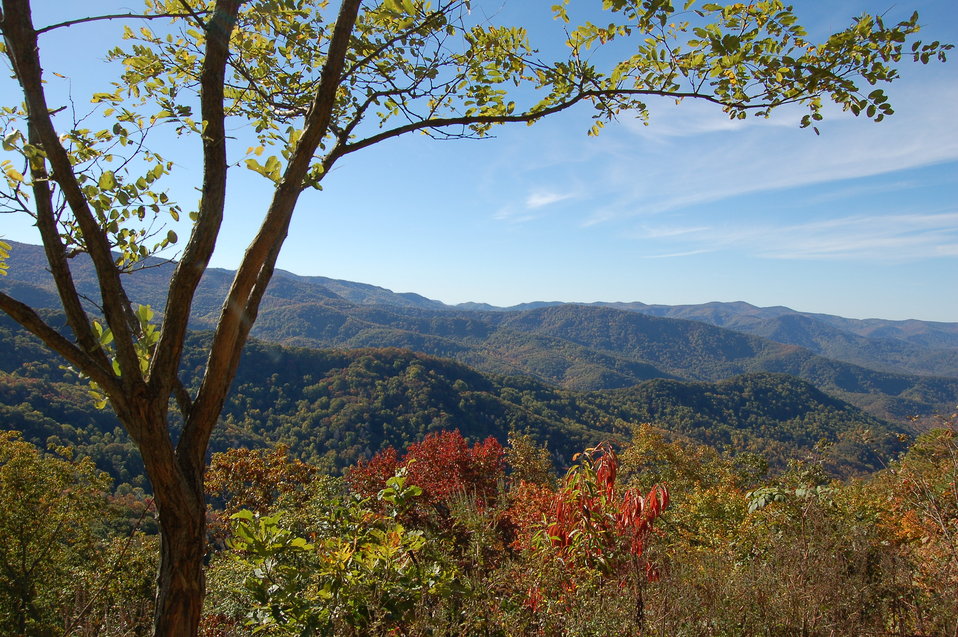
Enjoy the view from the Tellico River Road on the Cherokee National Forest in North Carolina. The U.S. Forest Service (FS) has a Forest Service 2012 Fall Colors Website and a toll-free Fall Colors Hotline at 1-800-354-4595 that will help visitors plan their trip to catch the colors at their peaks.USDA photo by J. Knowlton.